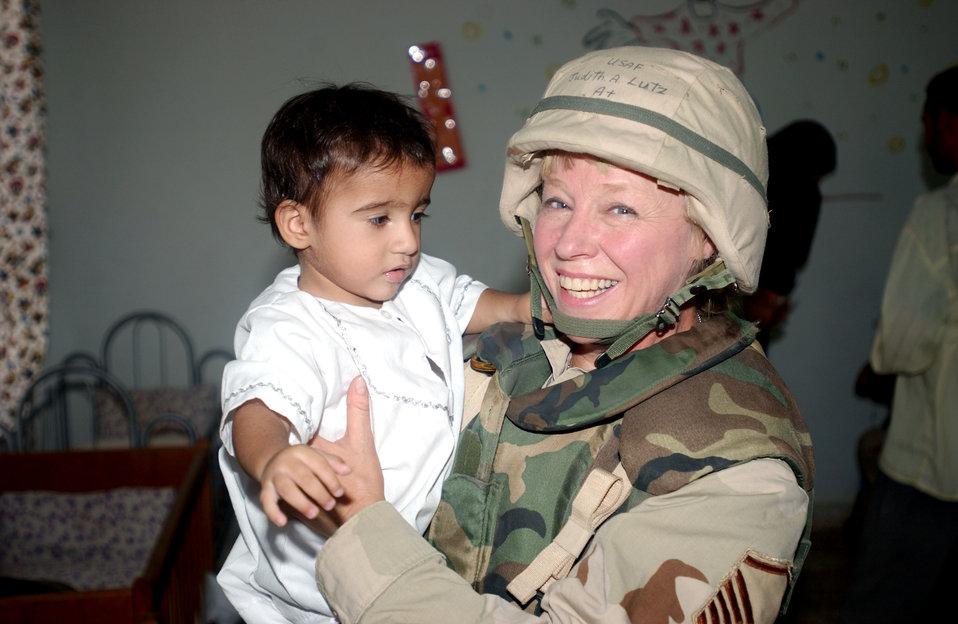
A new friend

AN NASIRYAH, Iraq -- Master Sgt Judith Lutz holds a child at an orphanage here Aug. 26. Lutz is deployed to nearby Tallil Air Base supporting Operation Iraqi Freedom. Airmen and soldiers from the base go to the orphanage regularly to visit with the children, as well as give them clothes and toys.